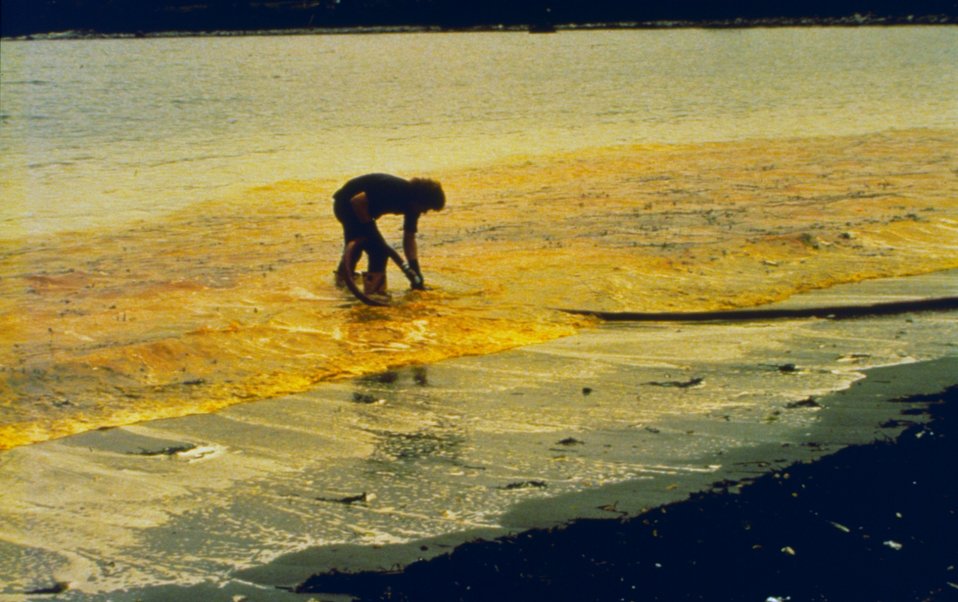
A clean-up worker in the process of skimming oil as part of the clean-up process after the World Prodigy oil-spill.